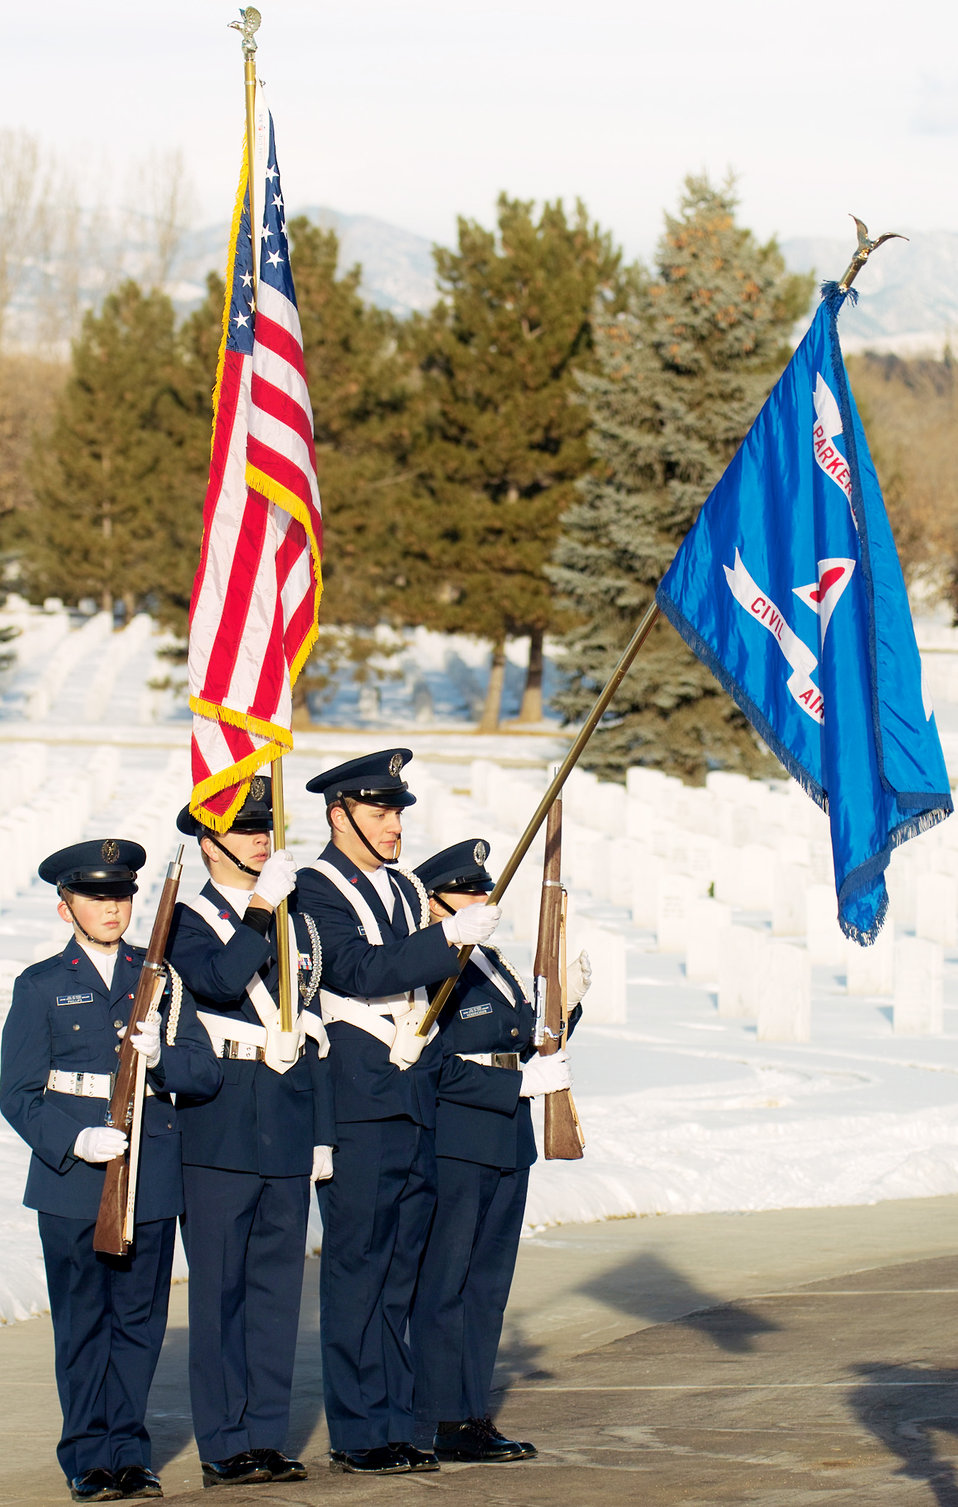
Volunteers honor veterans with wreaths

A Civil Air Patrol color guard presents arms during the national anthem at Fort Logan National Cemetery in Littleton, Colo., before volunteers began to place wreaths Dec. 14, 2009.